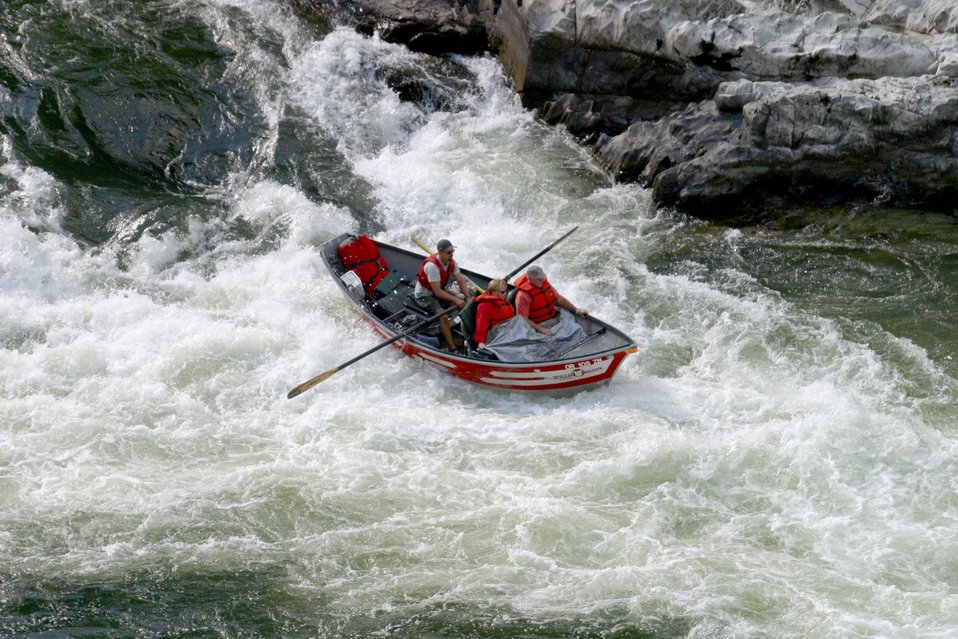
Grave Creek Falls